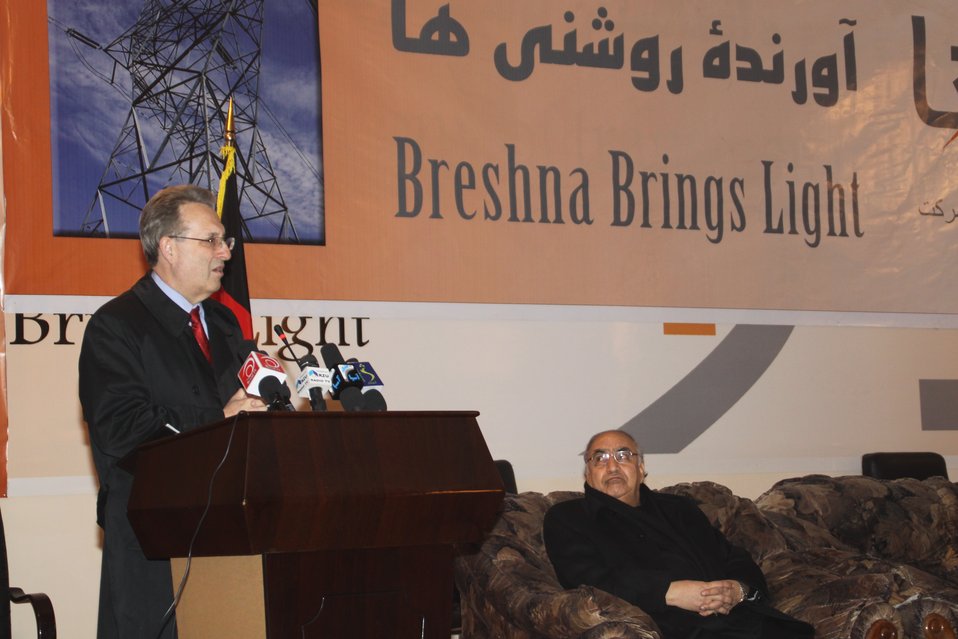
U.S. Ambassador E. Anthony Wayne